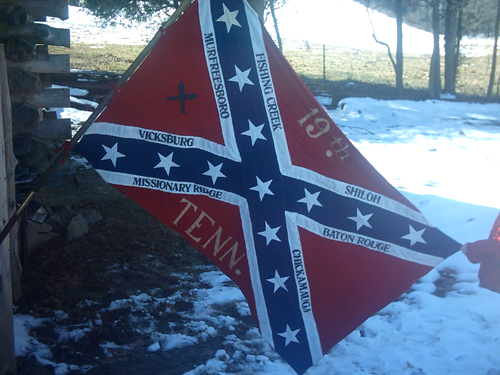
Photo of the regimental flag of the 19th Tennessee Infantry Reenactors